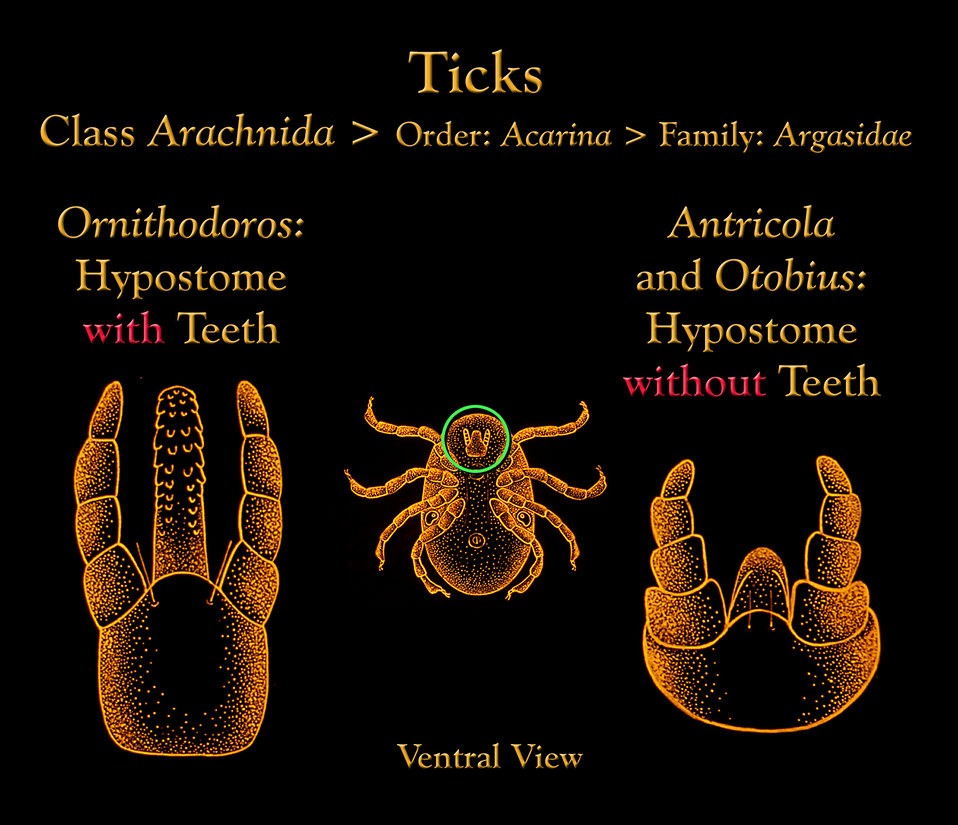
This illustration depicts two ventral views of the mouthparts of three genera of soft ticks, and their toothed vs. smooth hypostomes.